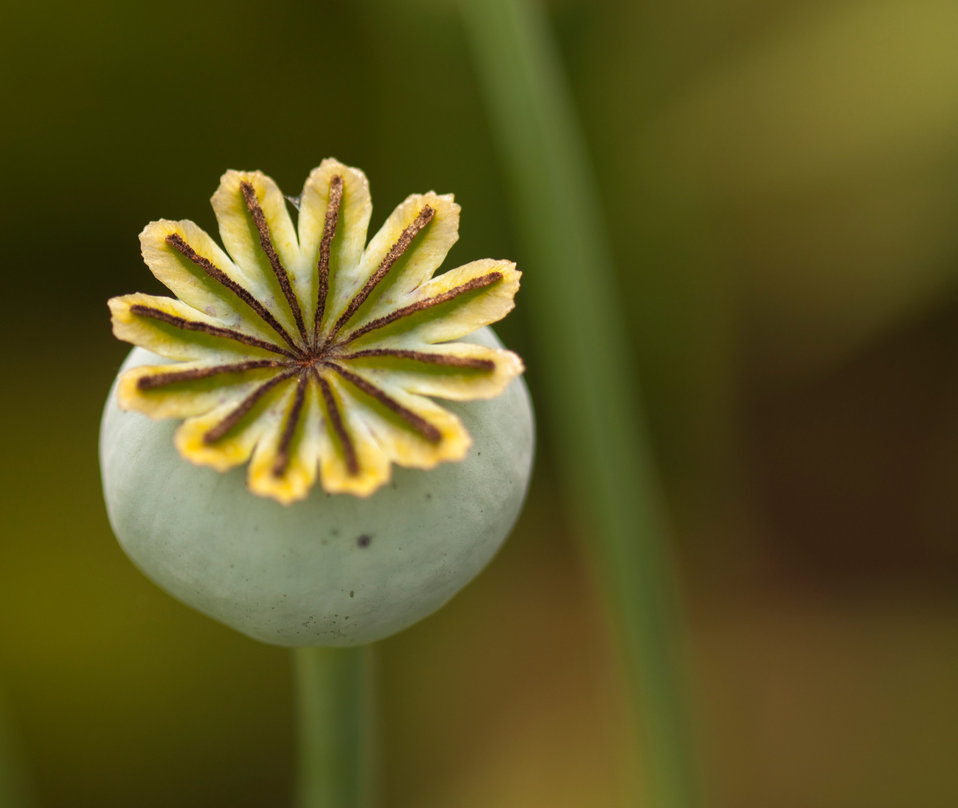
Poppy seed head macro

Macro image of a green poppy seed head in close-up.